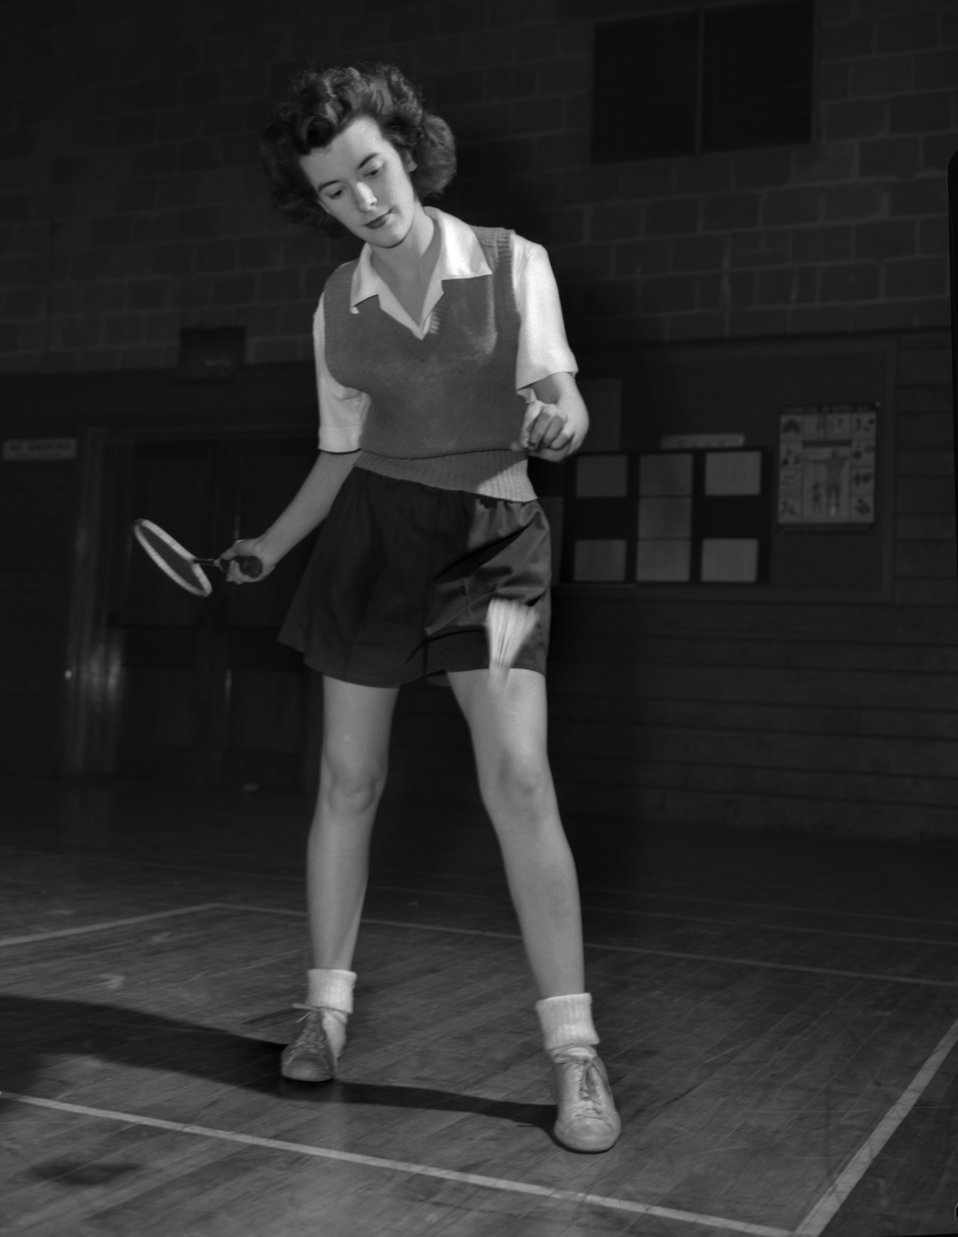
Jean Harampolis Playing Badminton Oak Ridge

3349-1 DOE photo Ed Westcott 3-19-1947 Oak Ridge Tennessee